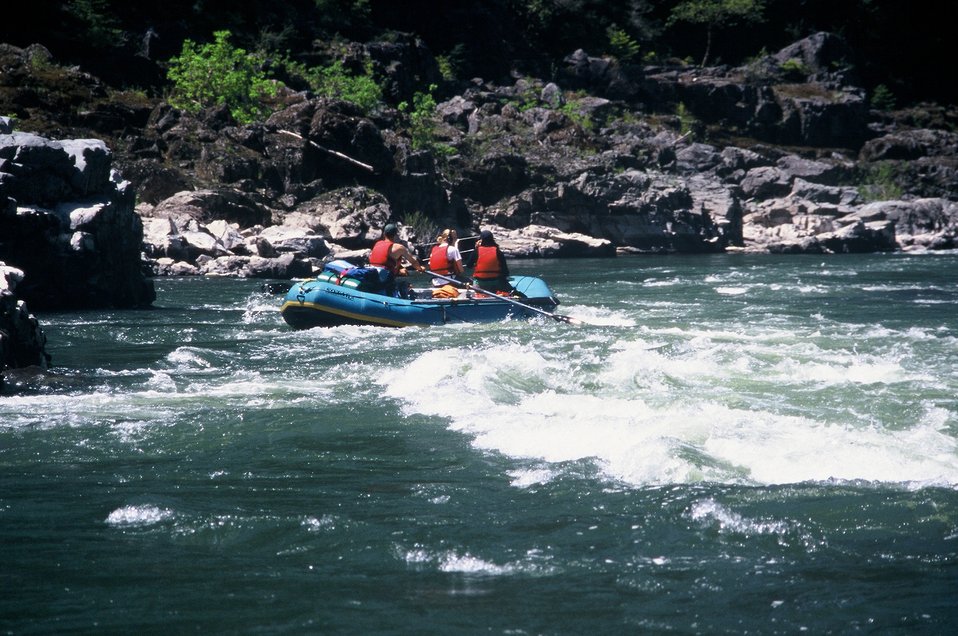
Wild section of the Rogue River from Grave Creek to Foster Bar May 19 to May 22.